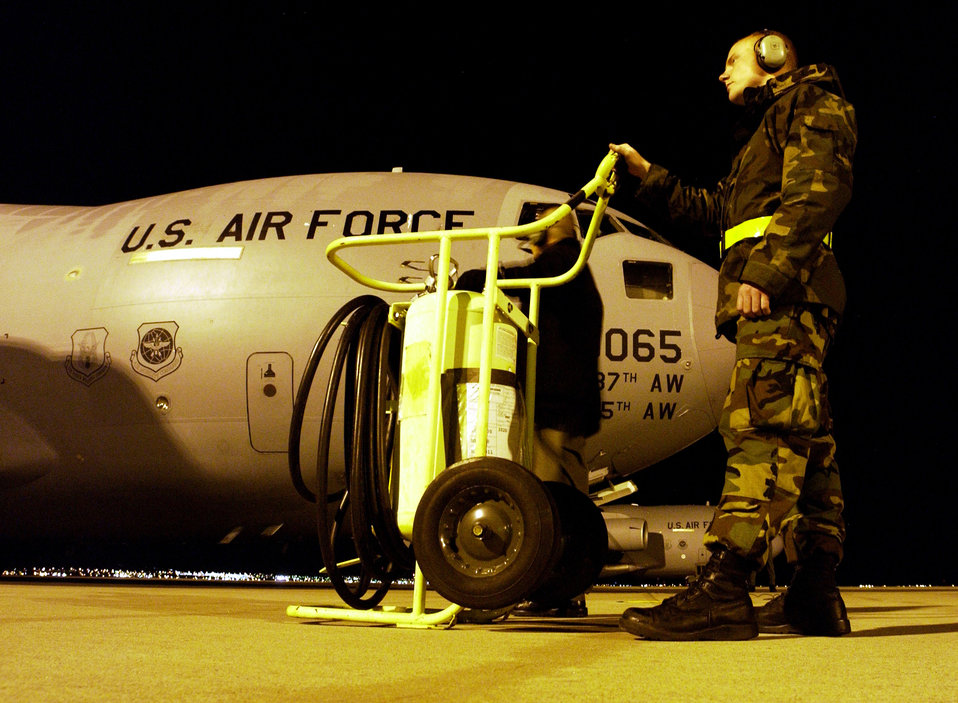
Start your engines

BIGGS ARMY AIR FIELD, Texas -- Senior Airman David Lynch waits for an engine start on a C-17 Globemaster III during a Composite Force Operations exercise here recently. Airman Lynch is assigned to the 437th Aircraft Maintenance Squadron at Charleston Air Force Base, S.C.